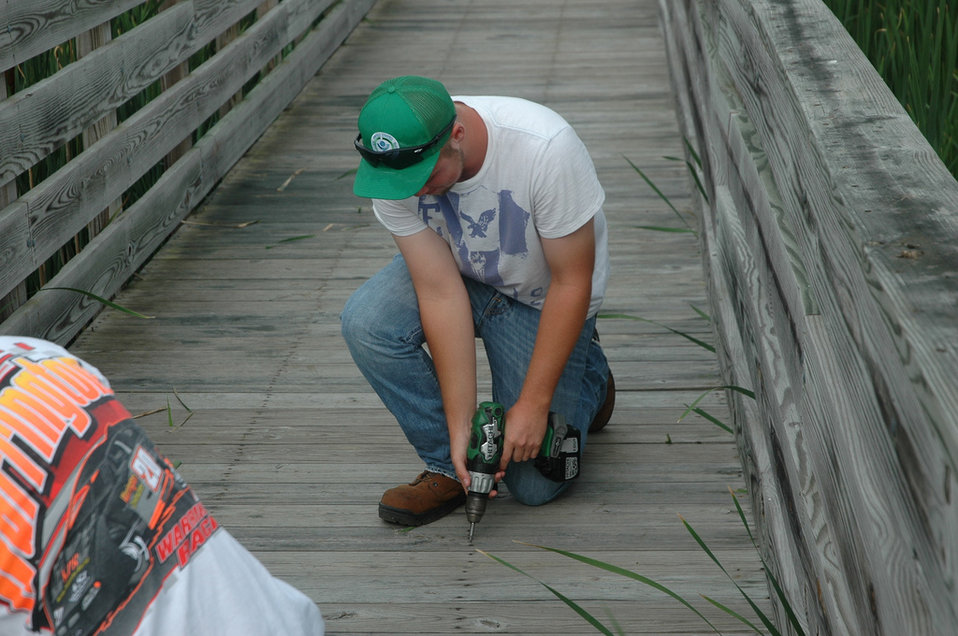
YCC Boardwalk Trail repair

U.S. Fish and Wildlife Service